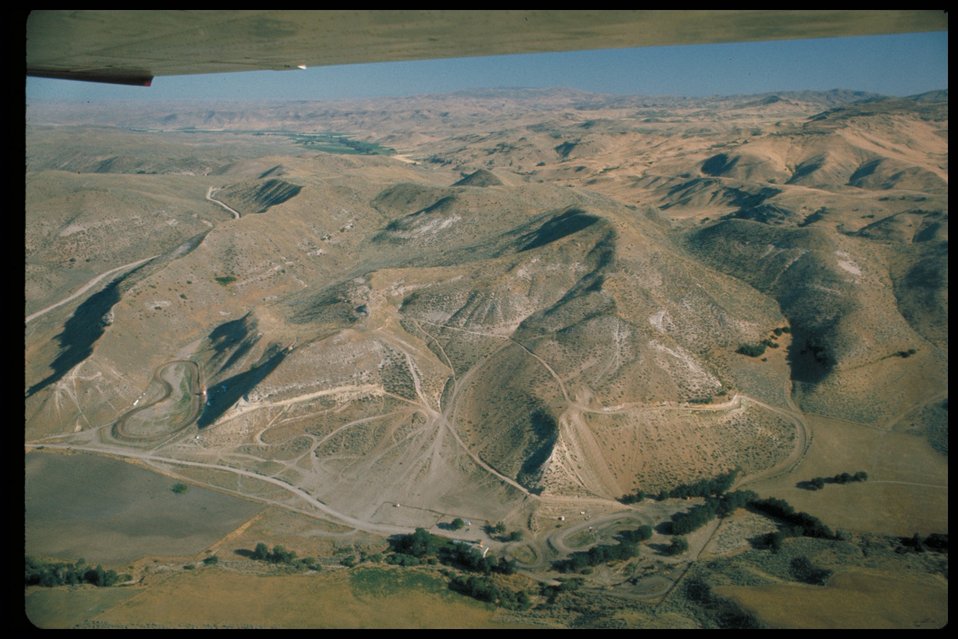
Peaceful Cove Cycle Park Boise Front OHV Off Highway Vehicles Four Rivers Field Office LSRD Lower Snake River District